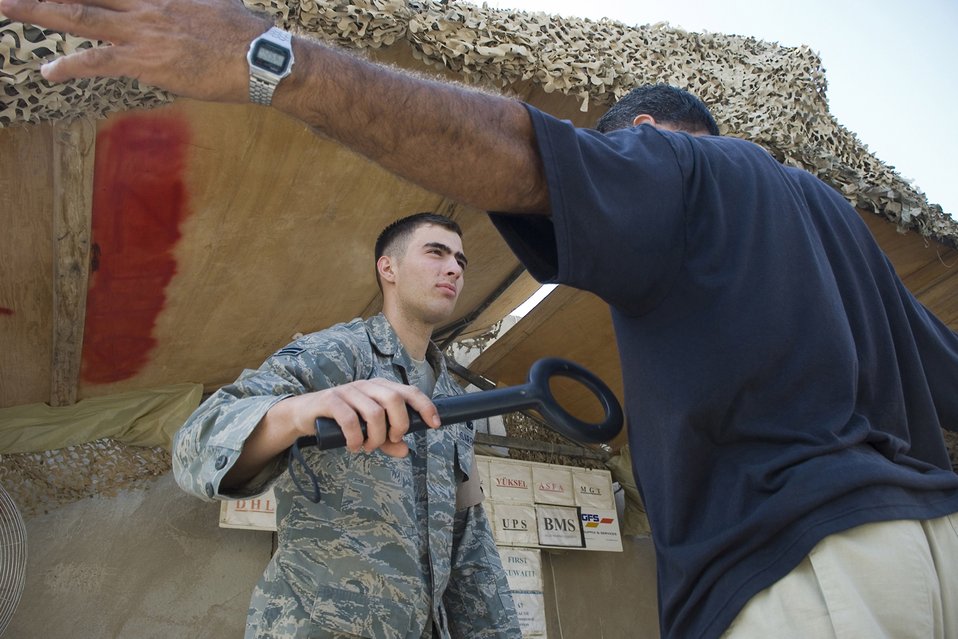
Anti-terrorism office helps Balad Airmen stay safe

Airman 1st Class Zak LaFlamme, 332nd Expeditionary Security Forces Squadron vehicle inspector, uses a metal
detector to check a foreign national to ensure he doesn't take any controlled items into a controlled area. Airman LaFlamme is deployed from Lackland Air Force Base, Texas.